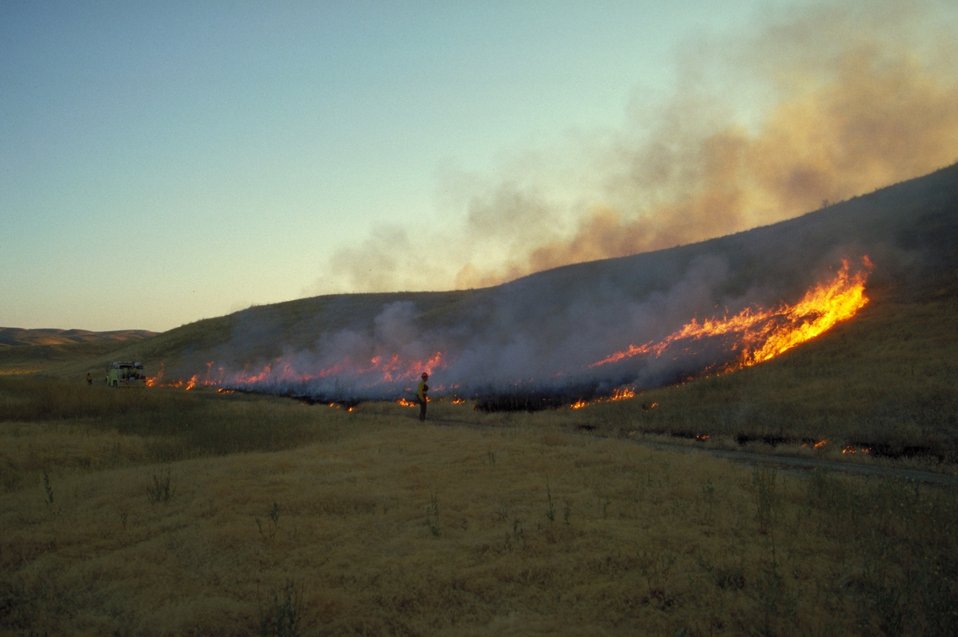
Prescribed burn Fire Season 2000 Lower Snake River District LSRD